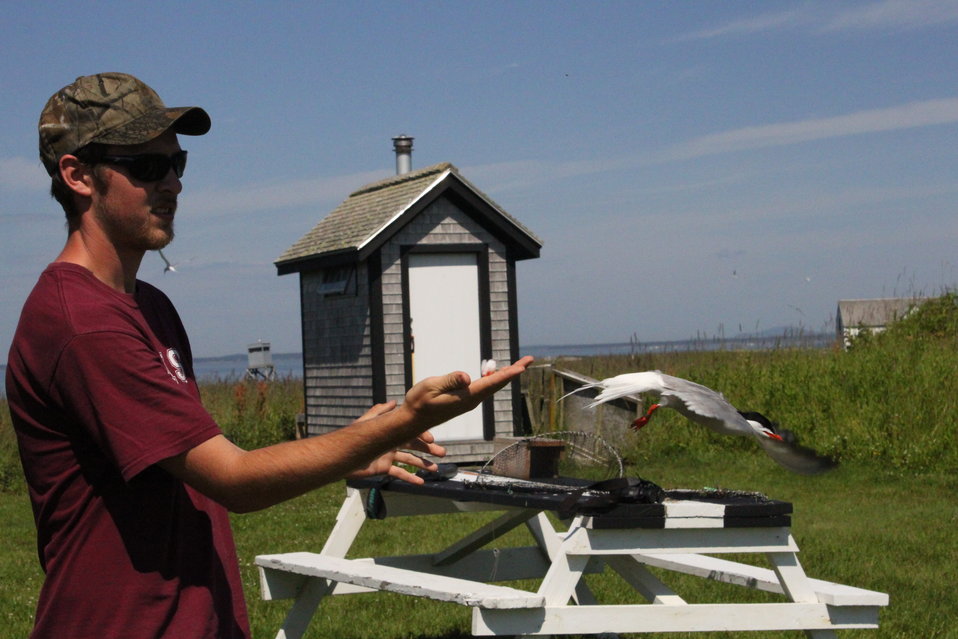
Setting Tern Free